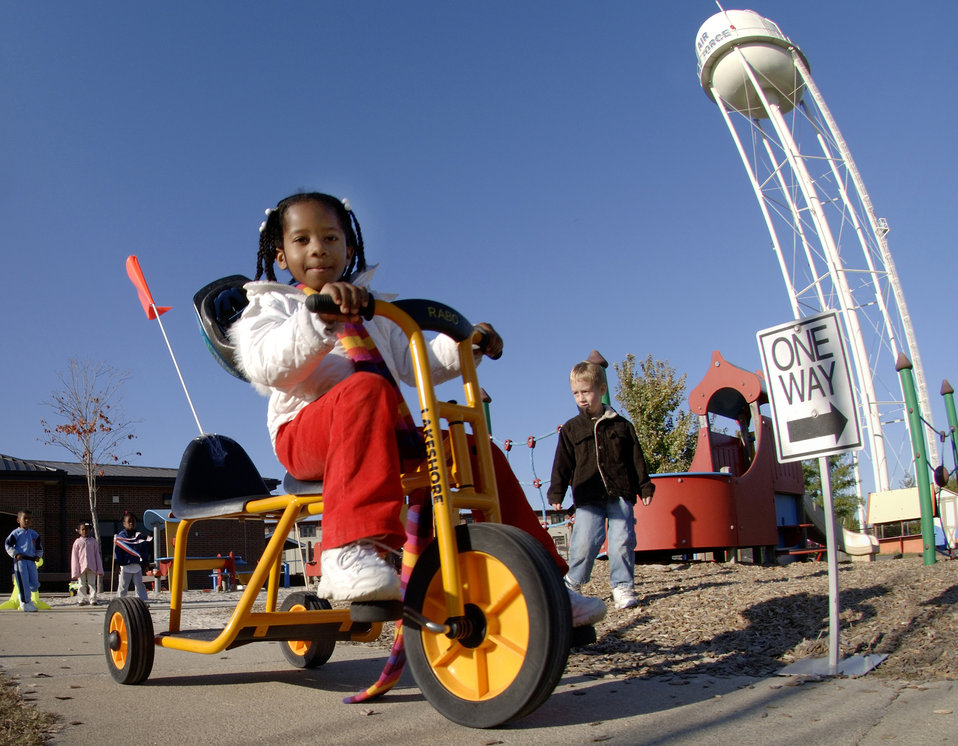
Trike-a-thon

LANGLEY AIR FORCE BASE, Va. -- Anya Brown rides a tricycle during the Saint Jude Children's Hospital Trike-a-thon. The fundraiser held at the base child development center, raises money to provide medical treatment for children of families who cannot afford medical treatment.